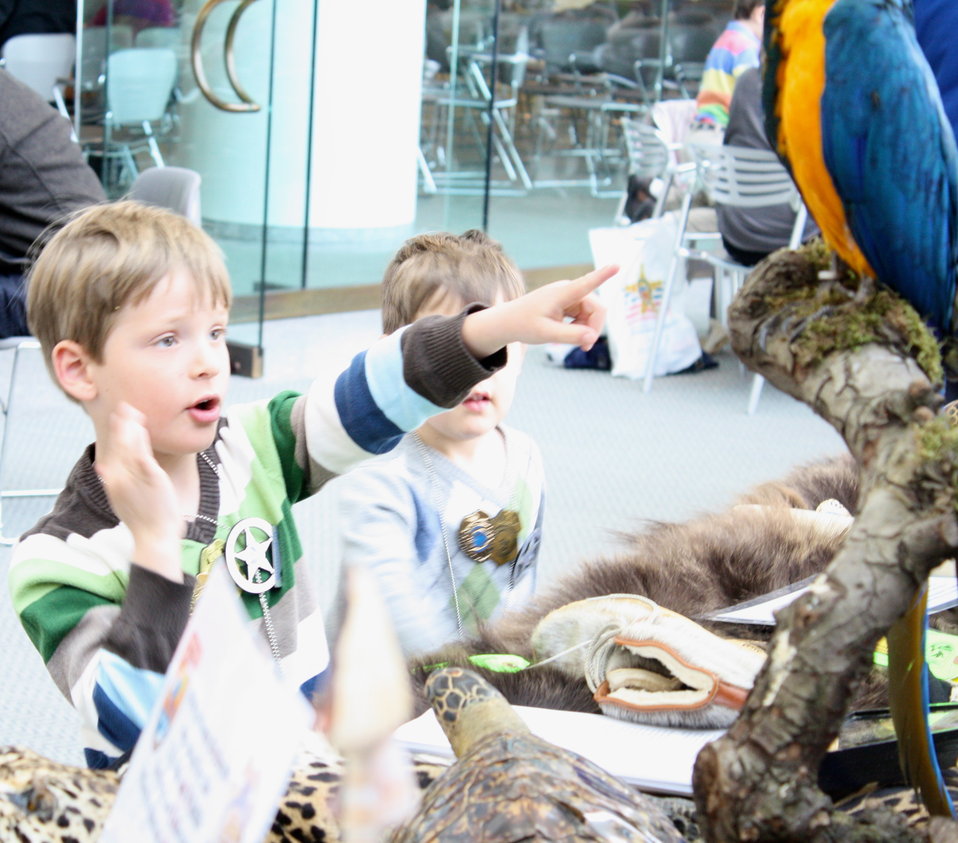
Boy and Macaw